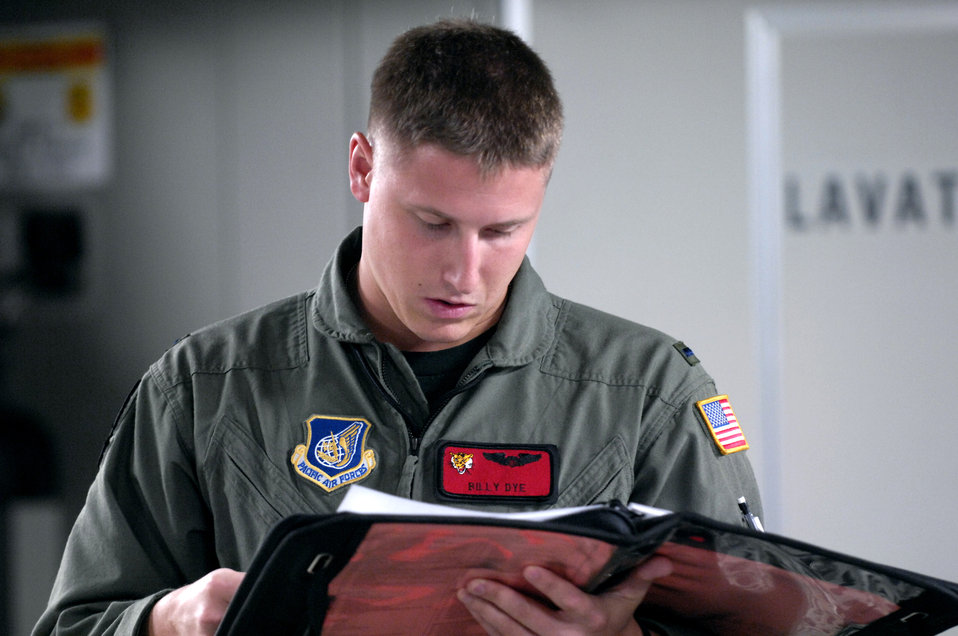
Global presence

1st Lt. Billy Dye looks over a logbook during a pre-flight inspection on a C-17 Globemaster III Jan. 19 at Hickam Air Force Base, Hawaii. Lieutenant Dye is a pilot with the 535th Airlift Squadron.